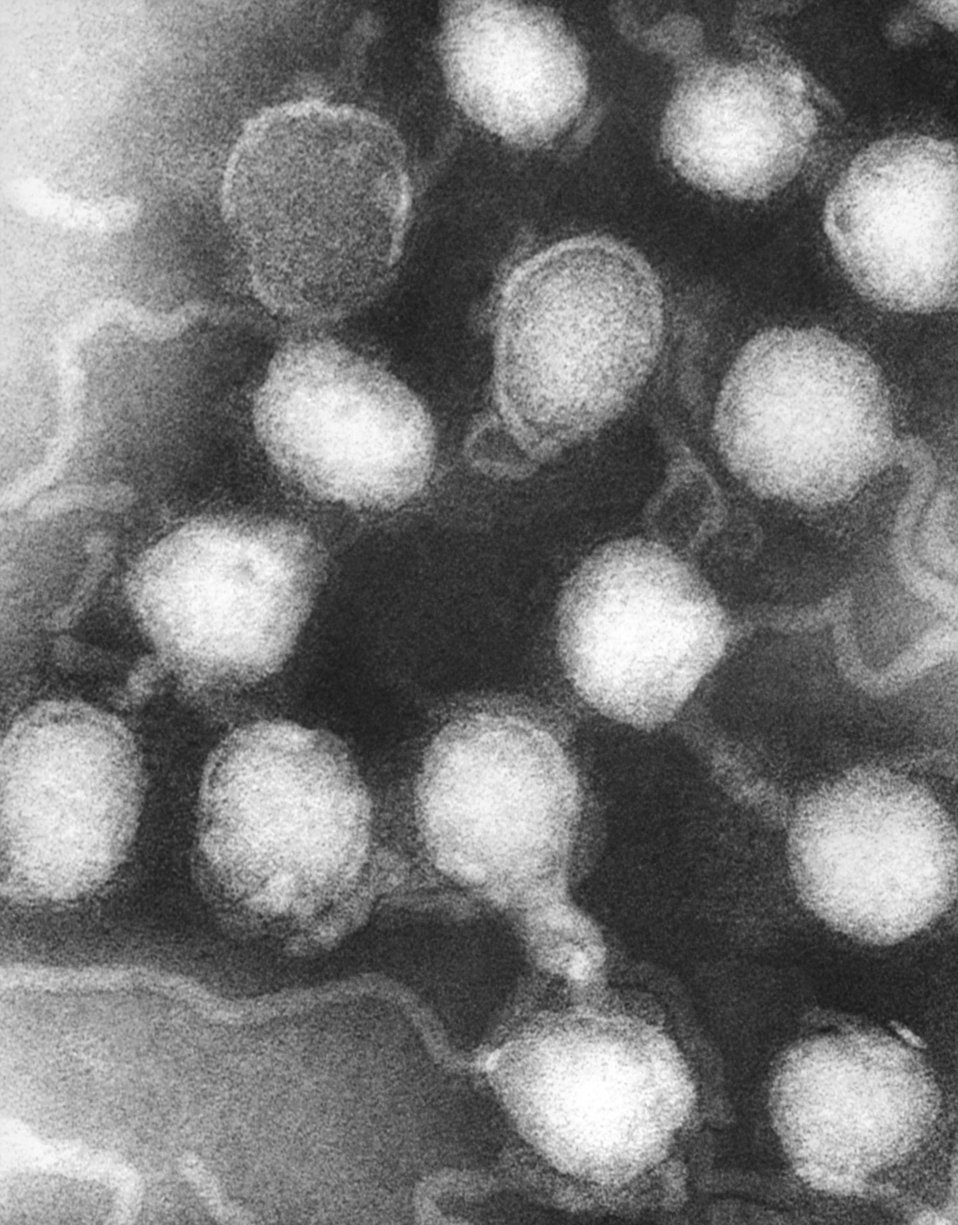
This negatively-stained transmission electron micrograph (TEM) revealed the presence of La Crosse (LAC) encephalitis virus ribonucleoprotein particles (RNP). LAC virus is a member of the Bunyaviridae virus family, California serogroup. This is an arbovorus, which means that transmission occurs through the bite of an infected arthropod, which in this case, is the treehole mosquito, Aedes triseriatus. LAC can also be transmitted through the bite of infected vertebrates including chipmunks and squirrels.